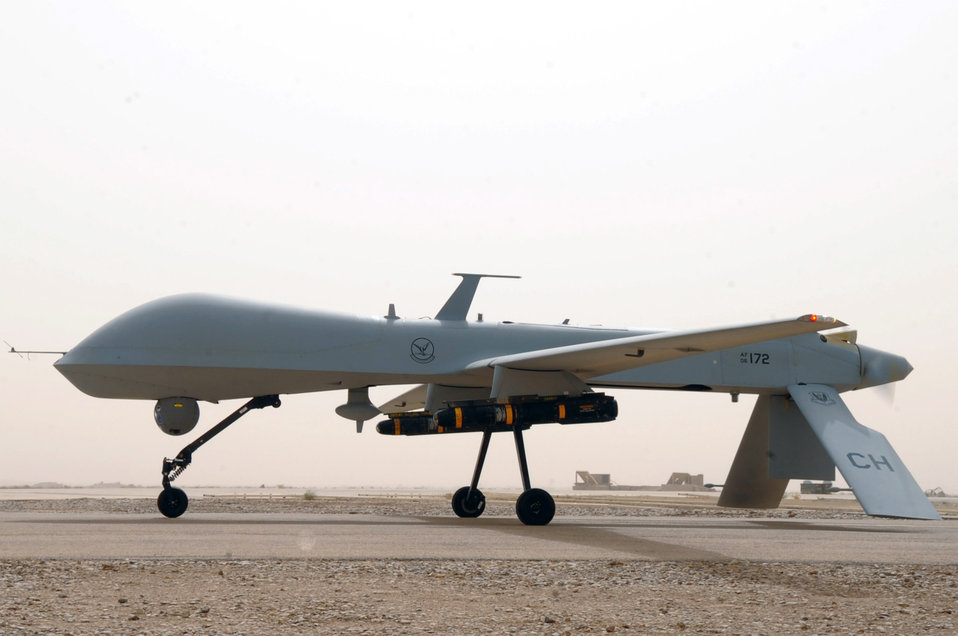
Jan. 21 airpower summary: Predators provide tactical reconnaissance

An MQ-1 Predator unmanned aircraft prepares for take off in support of Operation Iraqi Freedom. The Predator provides integrated and synchronized close-air operations, to include intelligence, surveillance and reconnaissance.